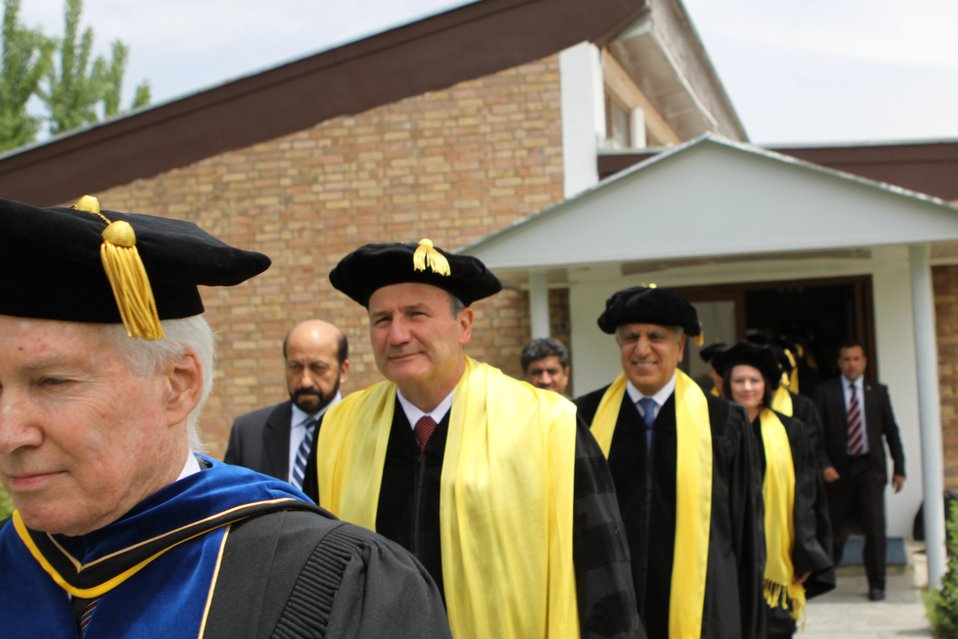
100526 AUAF Graduation 088